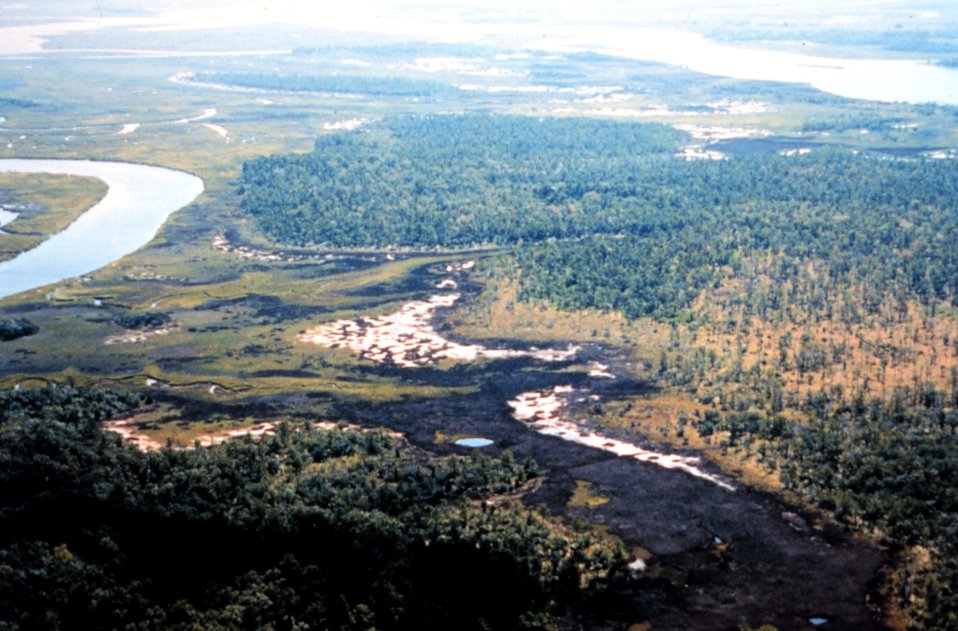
ACE Basin National Estuarine Research Reserve. Warren Island area.